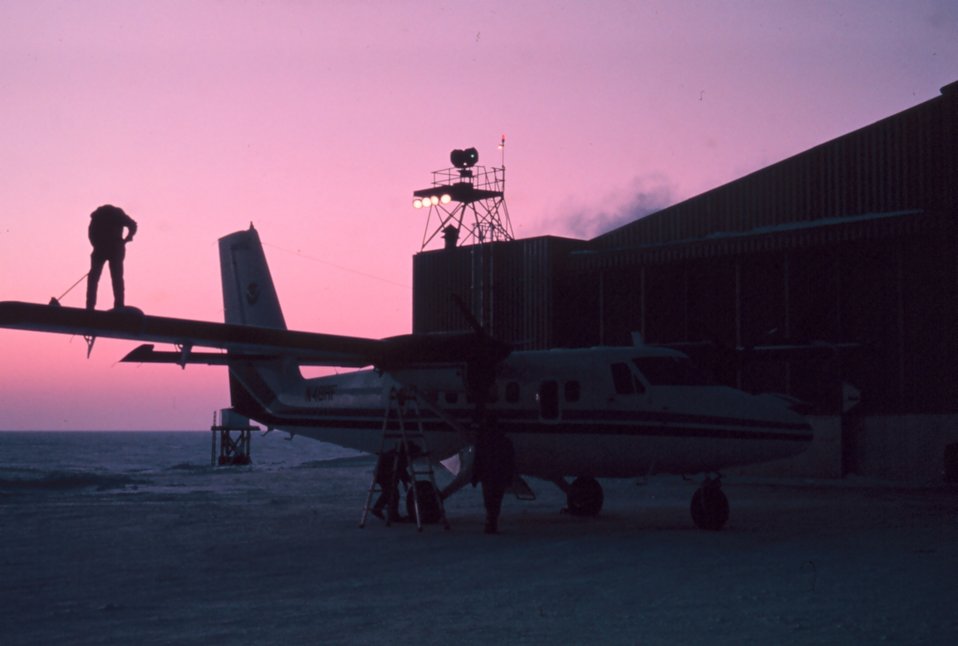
NOAA Dehavilland DHC-6-300 Twin Otter